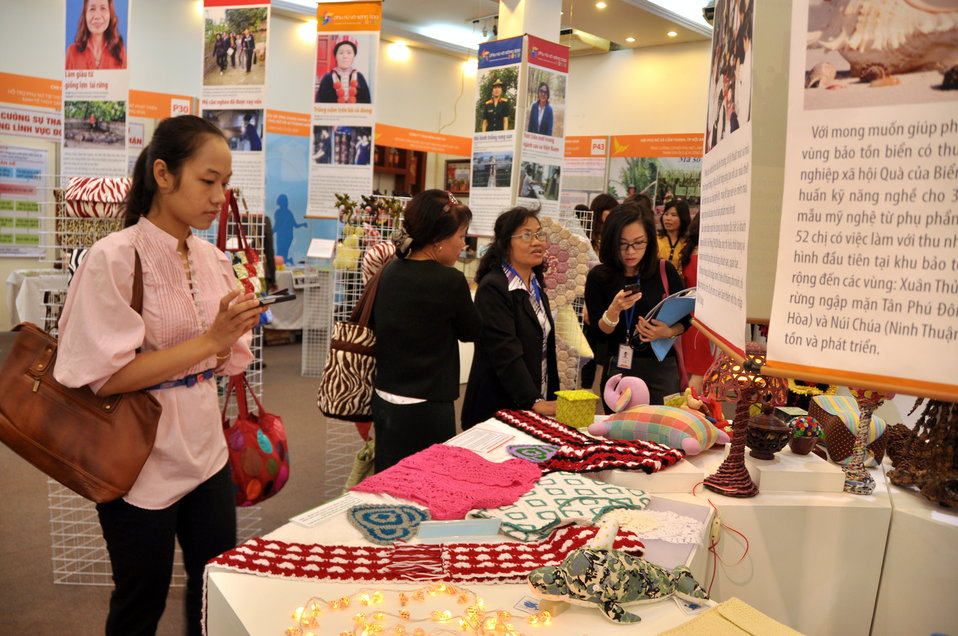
Vietnam Women Innovation Day 2013

Hanoi, October 1, 2013.